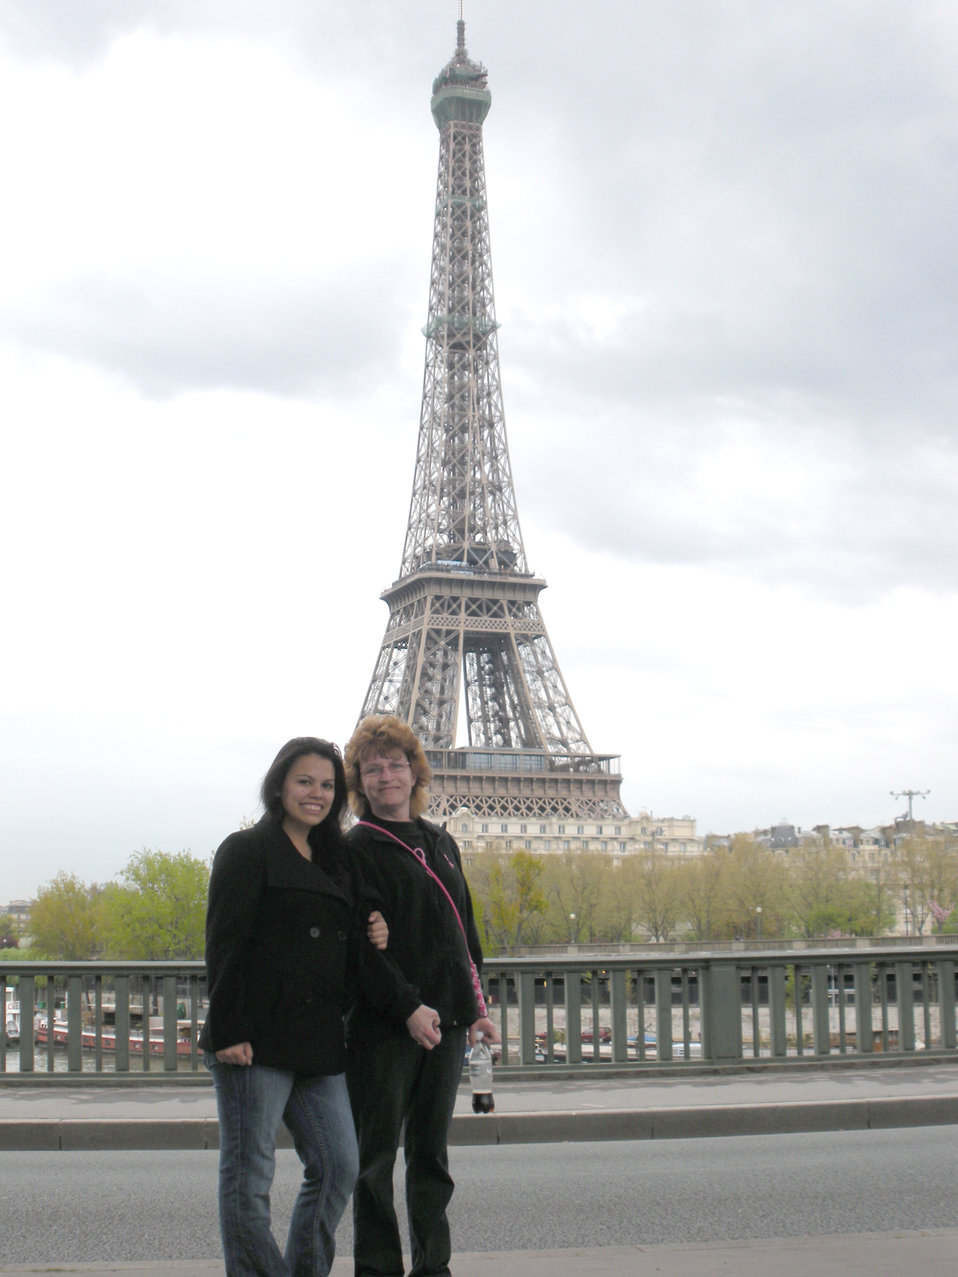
Breast cancer awareness

Carolyn Mosness and her daughter, Airman 1st Class Alexandria Mosness, in April 2009, at the Eiffel Tower in Paris, France. It has been 17 years since Mrs. Mosness was first diagnosed with breast cancer. She is a two-time breast cancer survivor.